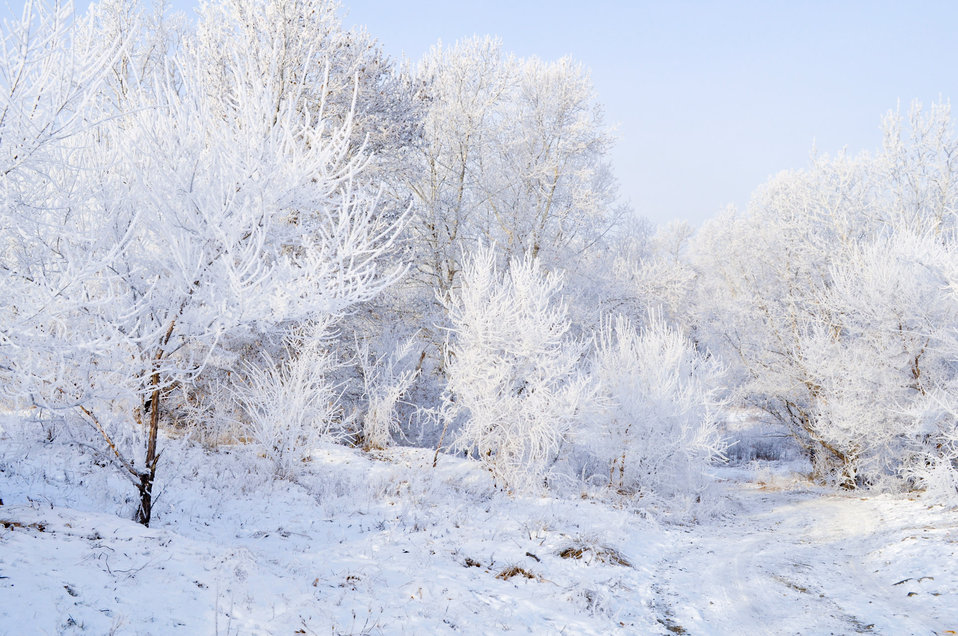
Winter landscape

Winter forest. trees in frost..